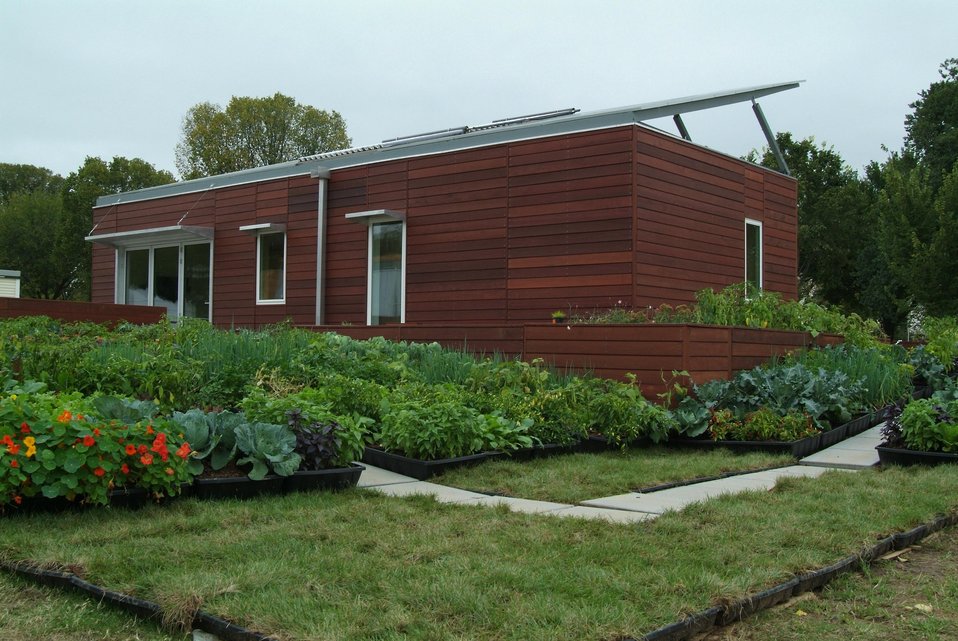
CORNELL UNIVERSITY GOT SECOND PLACE IN THE 2005 SOLAR DECATHLON.

THE SOLAR DECATHLON HELD ON OCTOBER 7-16, 2005 IN WASHINGTON, DC. THE PARTICIPANTS WERE FROM 18 COLLEGES AND UNIVERSITIES AROUND THE WORLD. THE TEAMS COMPETED IN THE DESIGN, BUILD AND OPERATED THE MOST ATTRACTIVE AND ENERGY-EFFICIENT SOLAR POWERED HOME. THE PARTICIPANTS ONLY USED ENERGY FROM THE SUN TO GENERATE ELECTRICITY TO OPERATE A HOME.